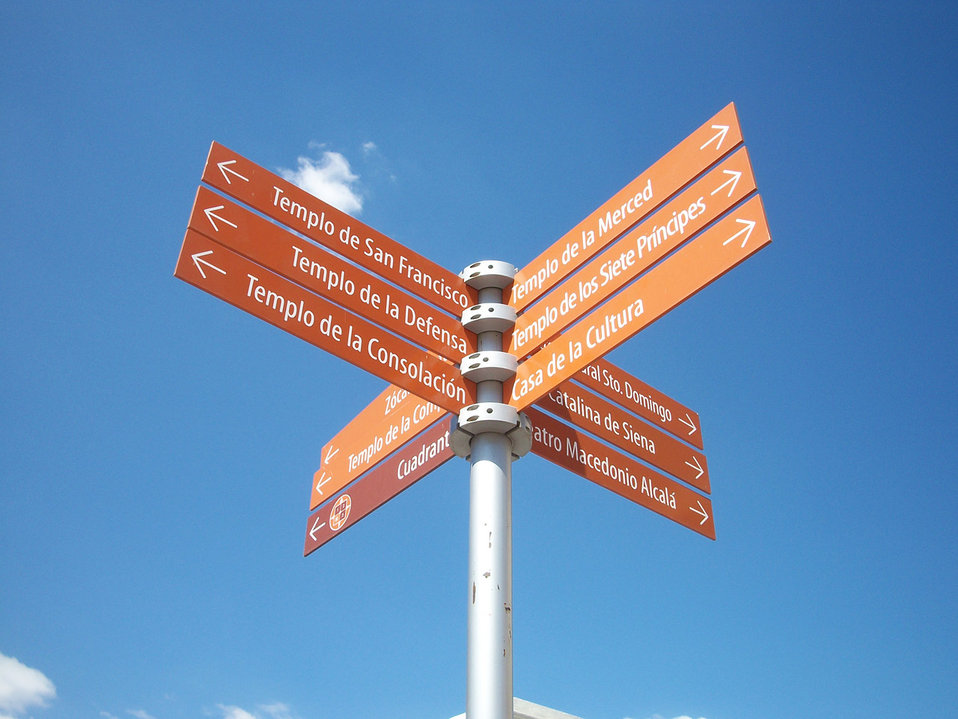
Signs to find buildings and locations.